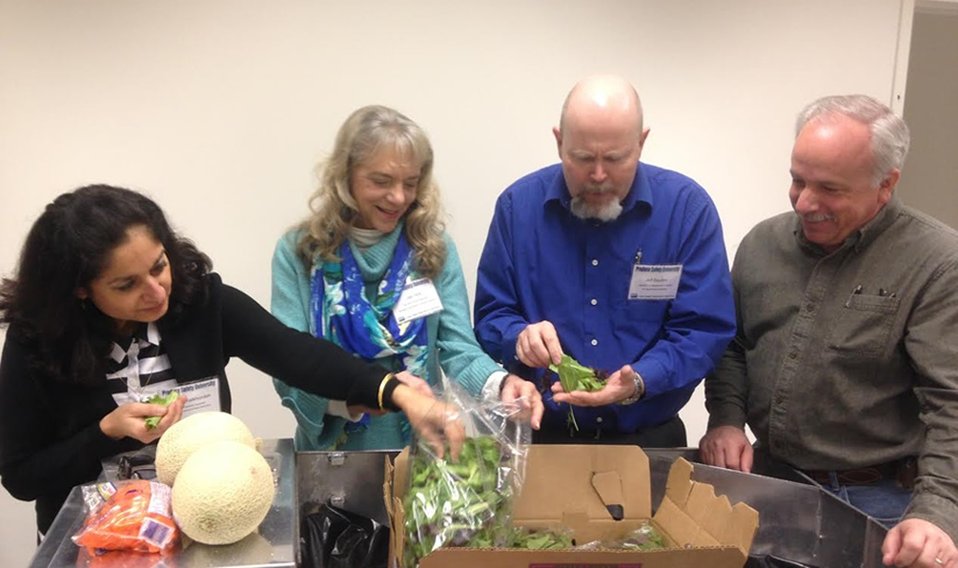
Produce Safety University - Lettuce Demonstration

The Produce Safety University offers hands-on training in a classroom setting, laboratory setting, and field trips. Produce Safety University (PSU) is a joint venture between the U.S. Department of Agriculture’s (USDA) Food and Nutrition Service (FNS) and Agricultural Marketing Service (AMS). PSU conducts five week-long classes each year to instruct school nutrition professionals and State Agency program directors about the produce industry, produce safety, and produce use in school foodservice. To date, more than 400 people have taken the training.